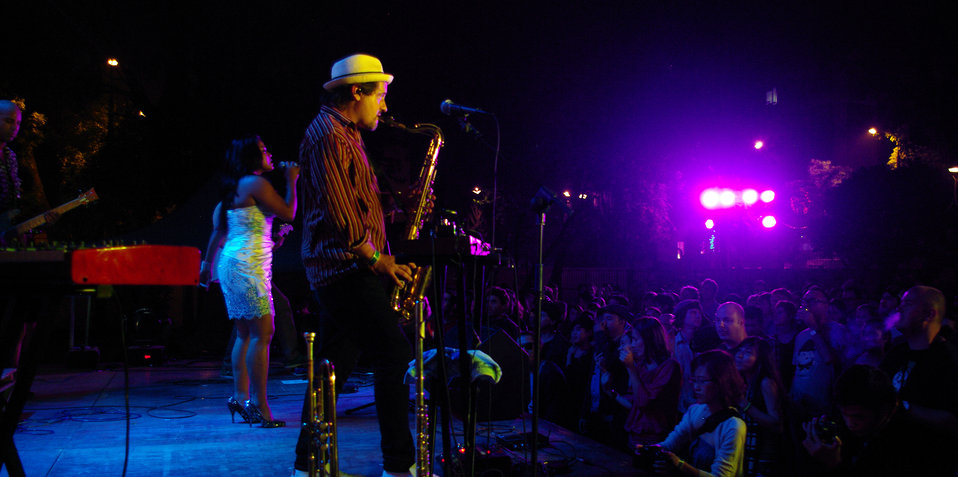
PEPFAR, U.S. Embassy Host Dengue Fever Concert in Hanoi